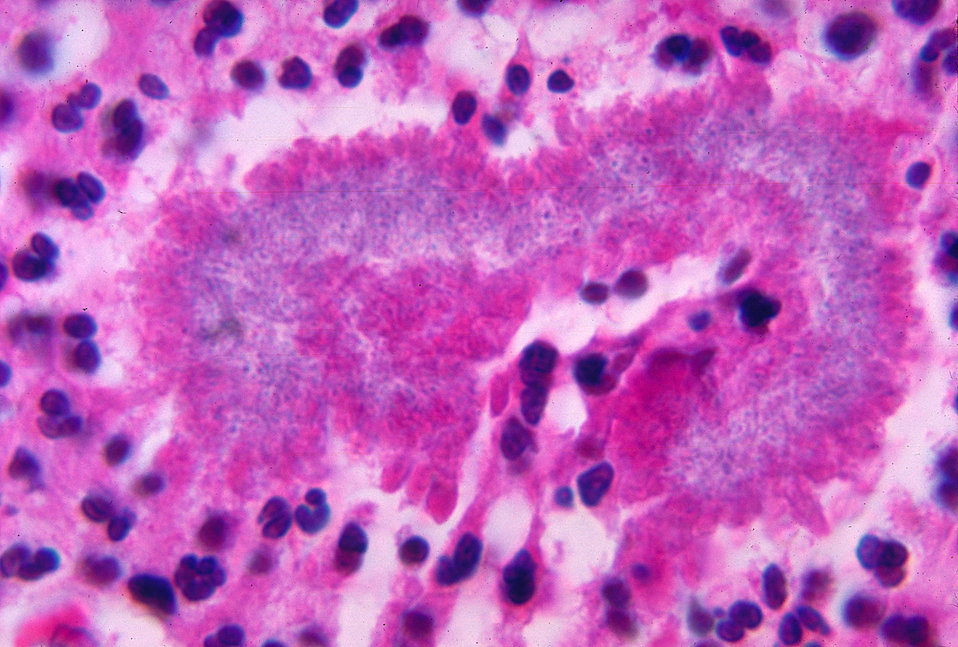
This micrograph reveals a granule with an eosinophilic border, i.e. Splendore-Hoeppli phenomenon, due to N. brasiliensis.